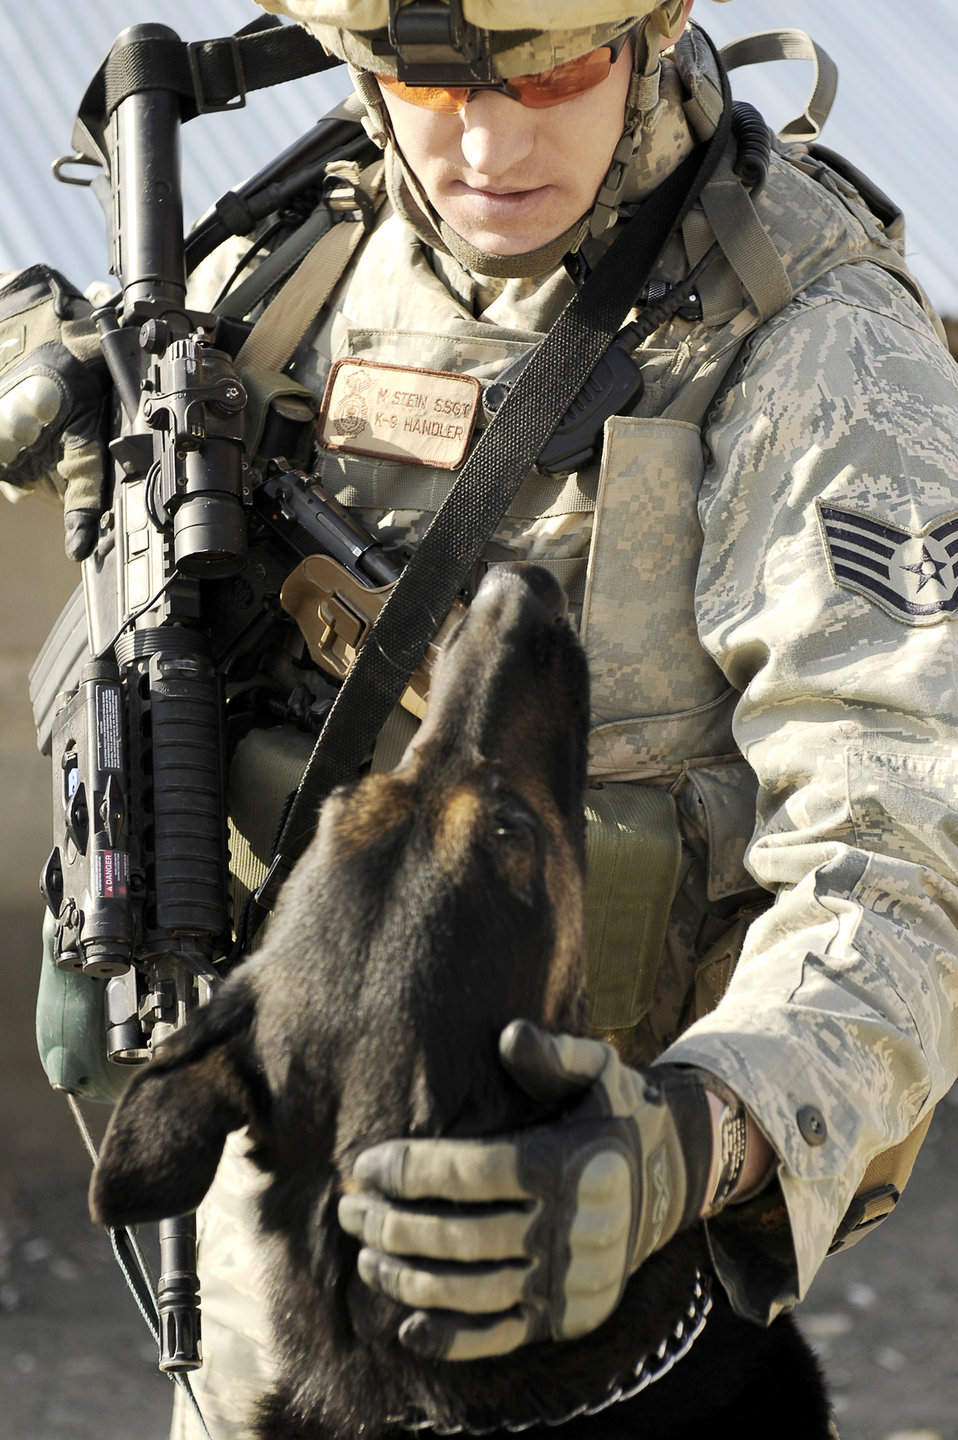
Good job, boy!

Staff Sgt. Mitchell Stein and Artus, his military working dog, take a break from their patrol Feb. 2, 2010, on Bagram Airfield, Afghanistan. Sergeant Stein and his partner are assigned to the 455th Expeditionary Security Forces Squadron.